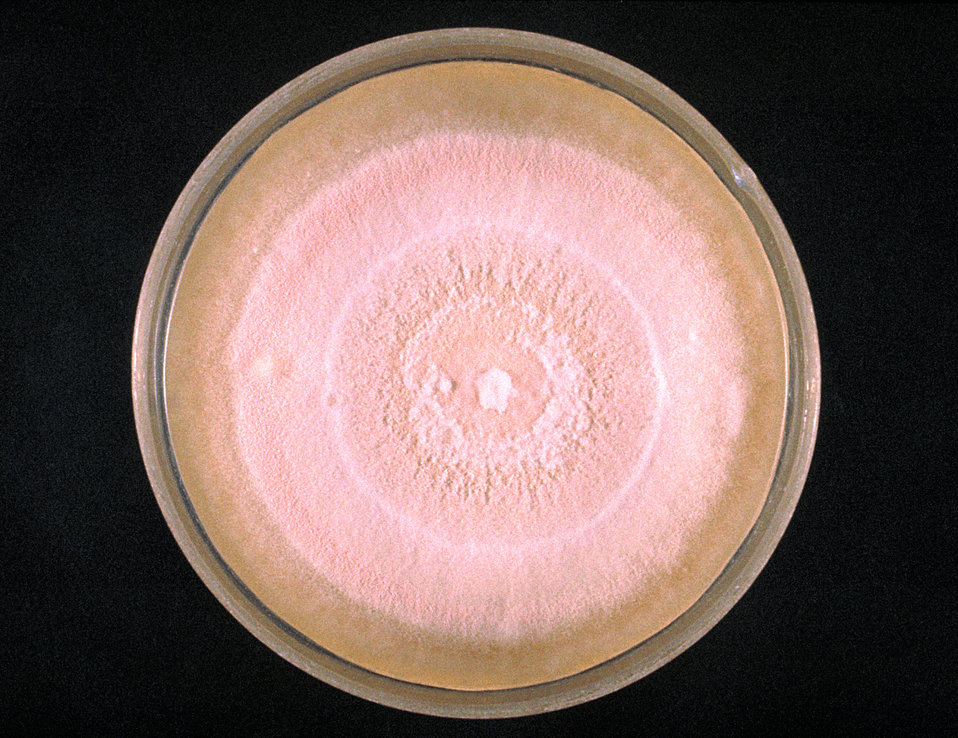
This photograph depicts Sabouraud's dextrose agar plate of the fungi Microsporum vanbreuseghemi.